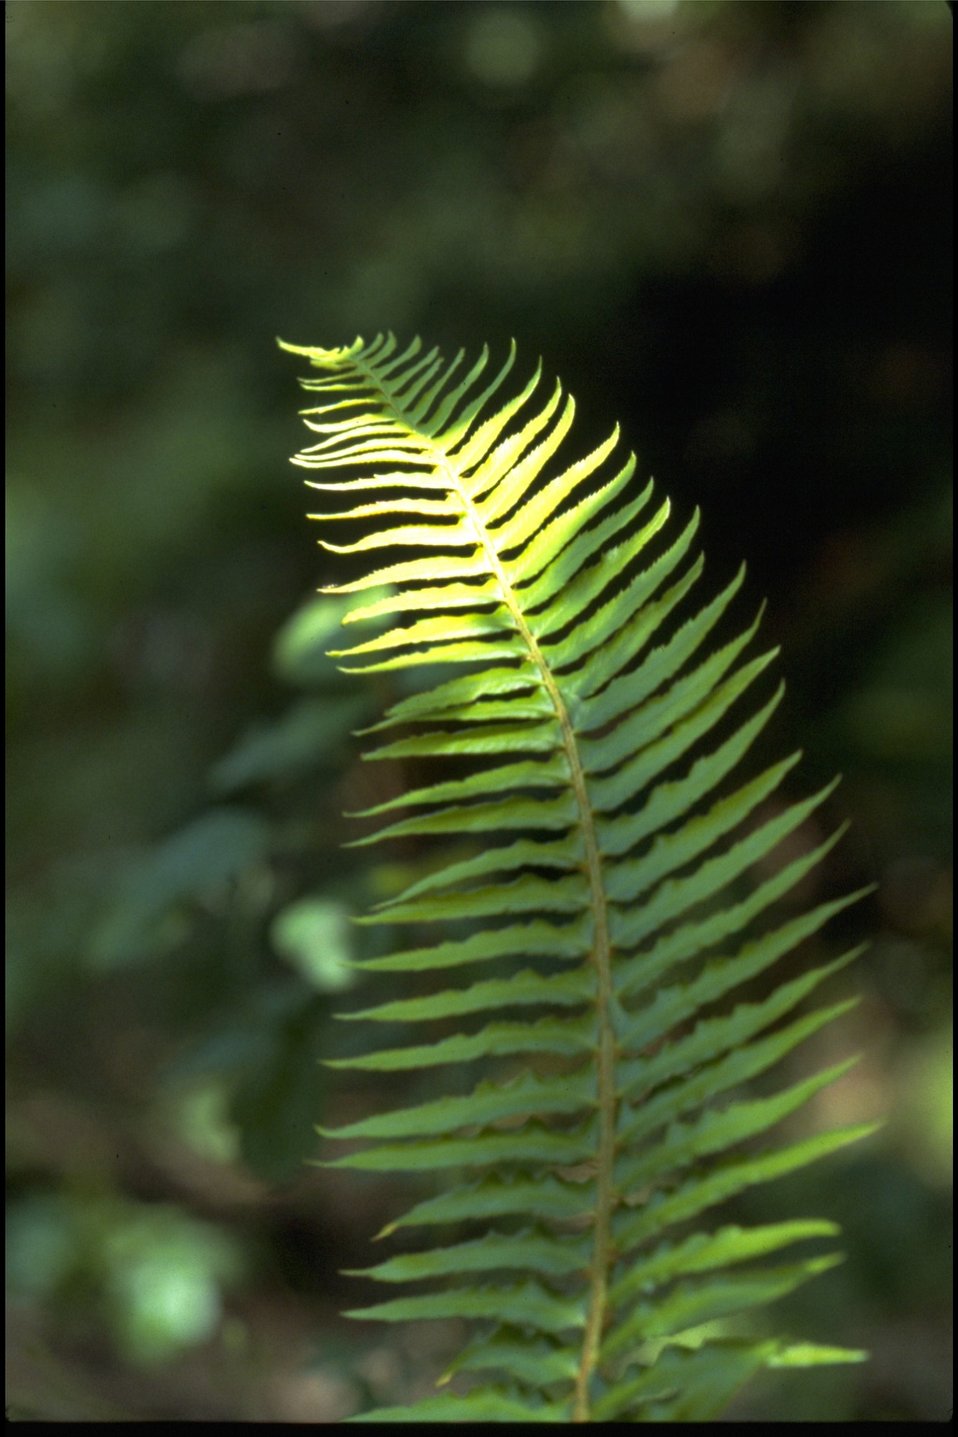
Rogue River - Sword Fern.